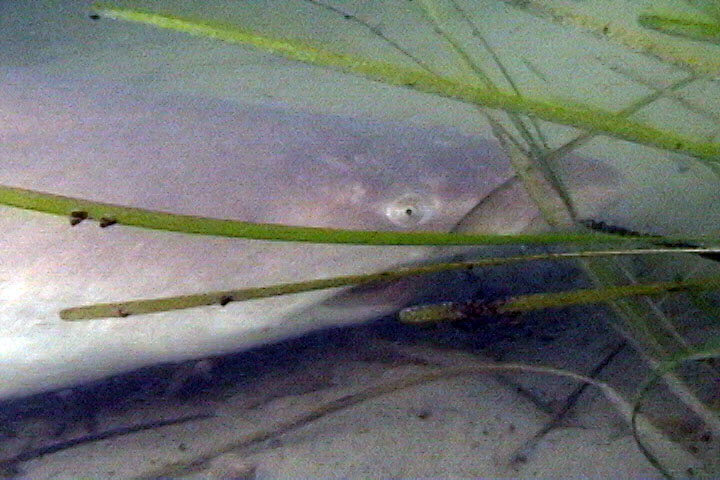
July 20, 2012 Sand Tiger Shark

This wild eyed shark was an exciting sight for EPA divers earlier this summer while studying Duxbury Bay, an estuary in southern Massachusetts.

What is an estuary?

Estuaries are incredibly important areas where the ocean meets freshwater from rivers and streams. Protected by natural land barriers from the full force of nature’s elements, such as waves and storms, estuaries are naturally good places for many species to live; especially for reproduction and nursery habitats for young marine life.

As you might expect, their location also makes them incredibly vulnerable to human impacts; development, runoff, and pollution to name a few. EPA studies estuaries around the United States to better understand their health and our environmental impacts. Knowing that, we can help to create better solutions to protect them.

Tracking species diversity, the type and quantity of life, is extremely important when studying the environment. EPA is documenting species diversity to illustrate the important role estuaries play in supporting marine life and how critical good water quality is to maintaining a diverse and healthy coastal ecosystem.

During this particular dive operation, EPA was working with the Massachusetts Division of Marine Fisheries and Jeff Kneebone, a graduate student at the University of Massachusetts who has been studying juvenile sand tiger sharks in this area. This shark is less than four feet long.